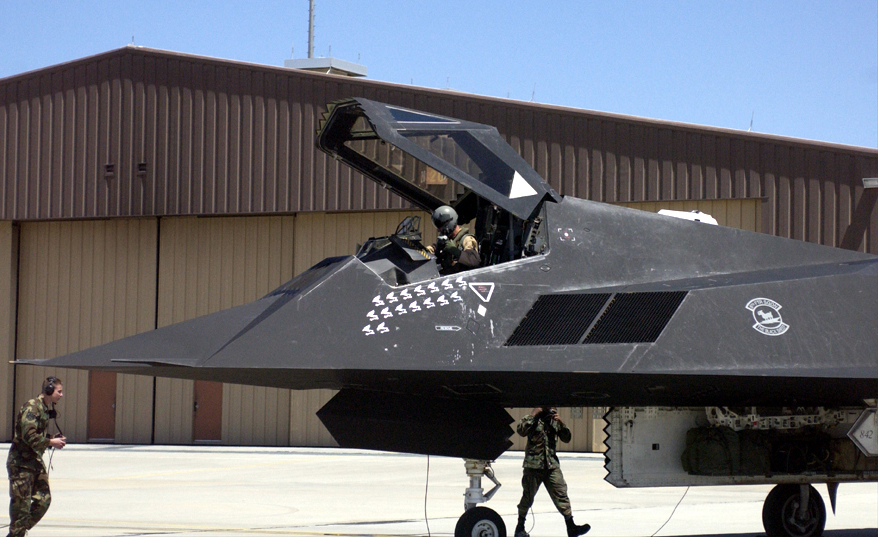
Nighthawks return home

HOLLOMAN AIR FORCE BASE, N.M. (AFPN) -- An F-117 Nighthawk pulls onto the tarmac here April 16, as it returned with four other F-117s from Southwest Asia after supporting Operation Iraqi Freedom. This jet displays 16 combat mission marks showing the number of combat missions it flew during the deployment.